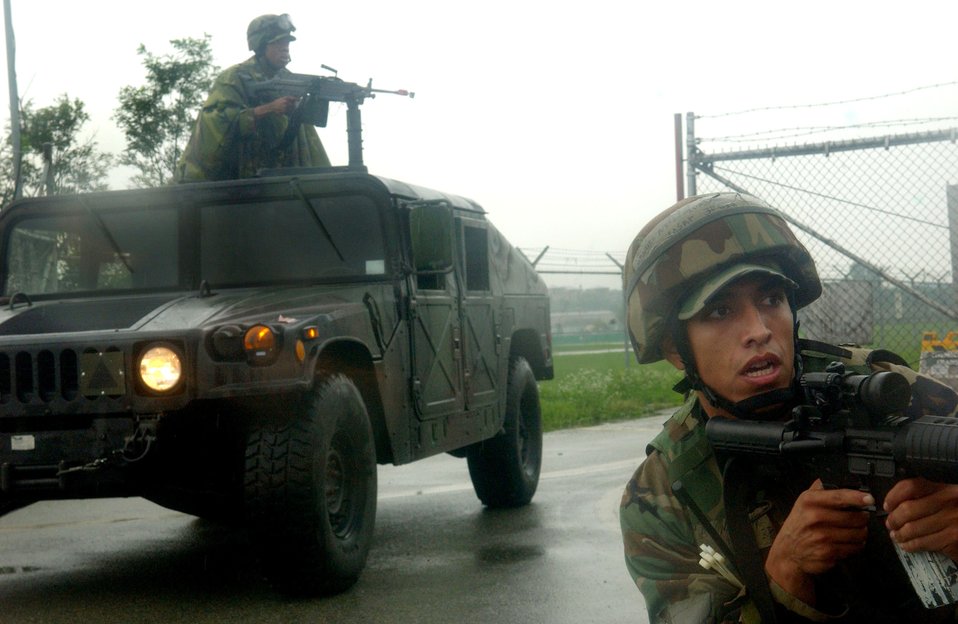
Beverly Bulldog

Security forces Airmen wait for